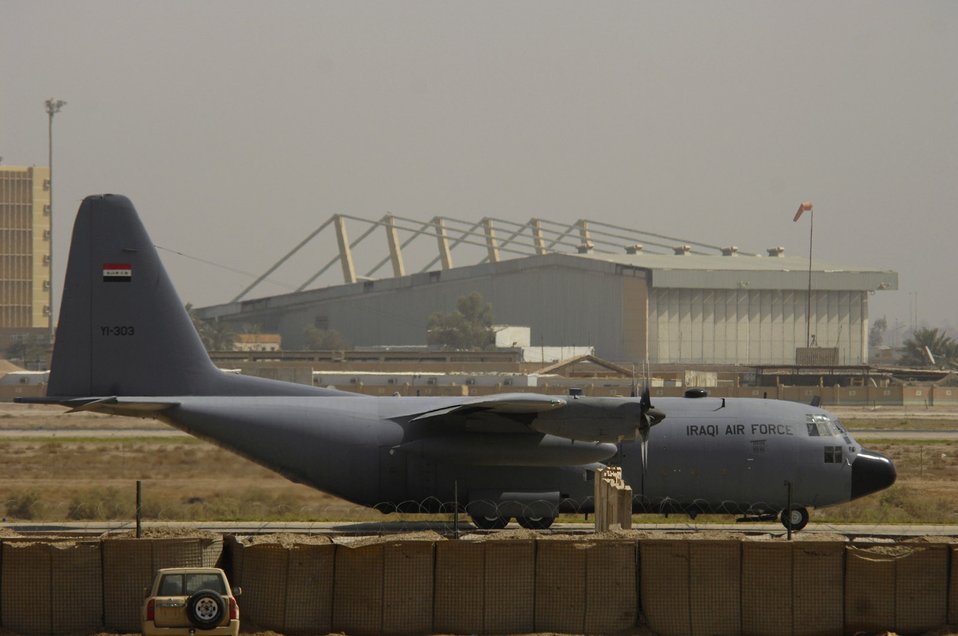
Iraqi air force in the fight

An Iraqi air force C-130 Hercules loaded with Iraqi army soldiers taxies to the runway before a March 30 flight to Basra, Iraq, at New Al Muthana Air Base, Iraq. All processing, loading and transporting of the Iraqi troops is being conducted by the Iraqi air force.